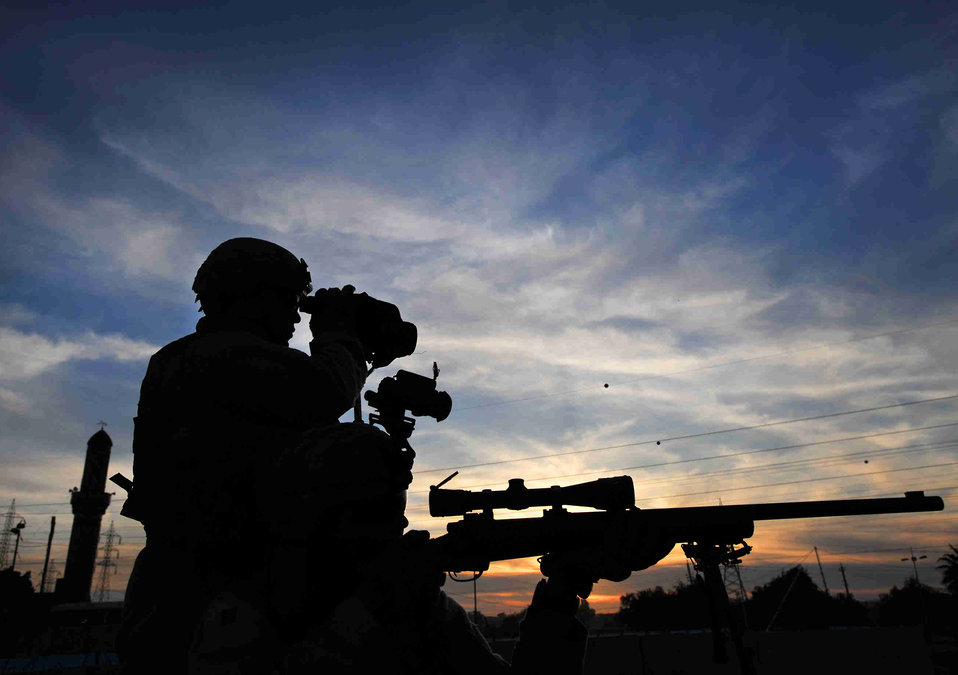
Security forces unit provides combat support to Iraq

Airmen sharpshooters scan the horizon for possible threats December 2008 in the Al Doura community of southern Baghdad, Iraq. The Airmen are assigned to a close precision engagement team with the 732nd Expeditionary Security Forces Squadron with the 716th Military Police Battalion.